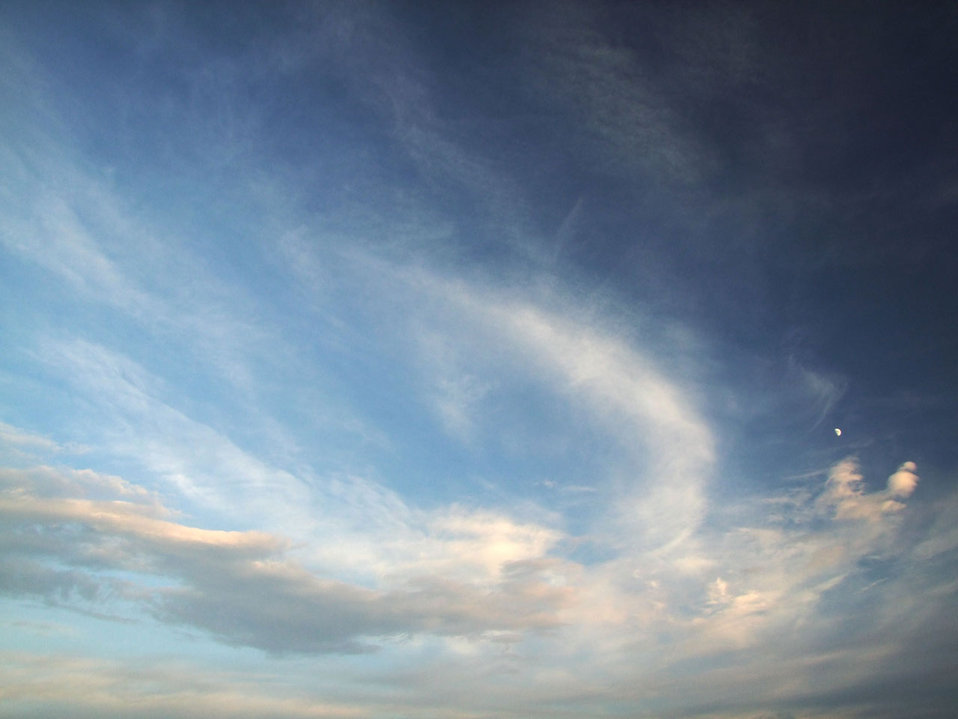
Phoenix

Do you see a cloud like a bird.